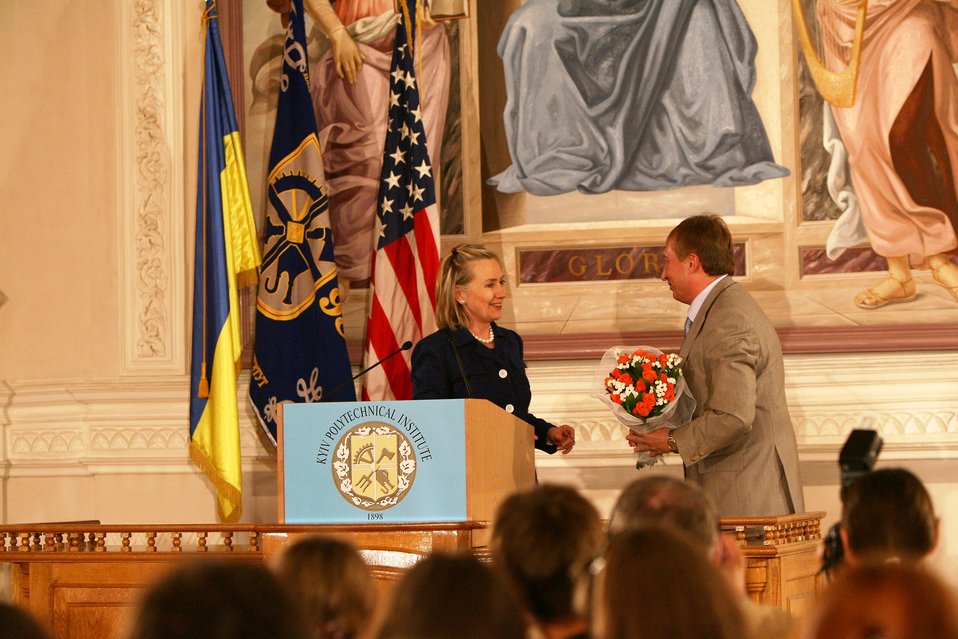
Secretary Clinton Addresses Kyiv Polytechnic Institute Town Hall

U.S. Secretary of State Hillary Rodham Clinton is greeted by Rector at Kyiv Polytechnic Institute in Kyiv, Ukraine, on July 2, 2010.